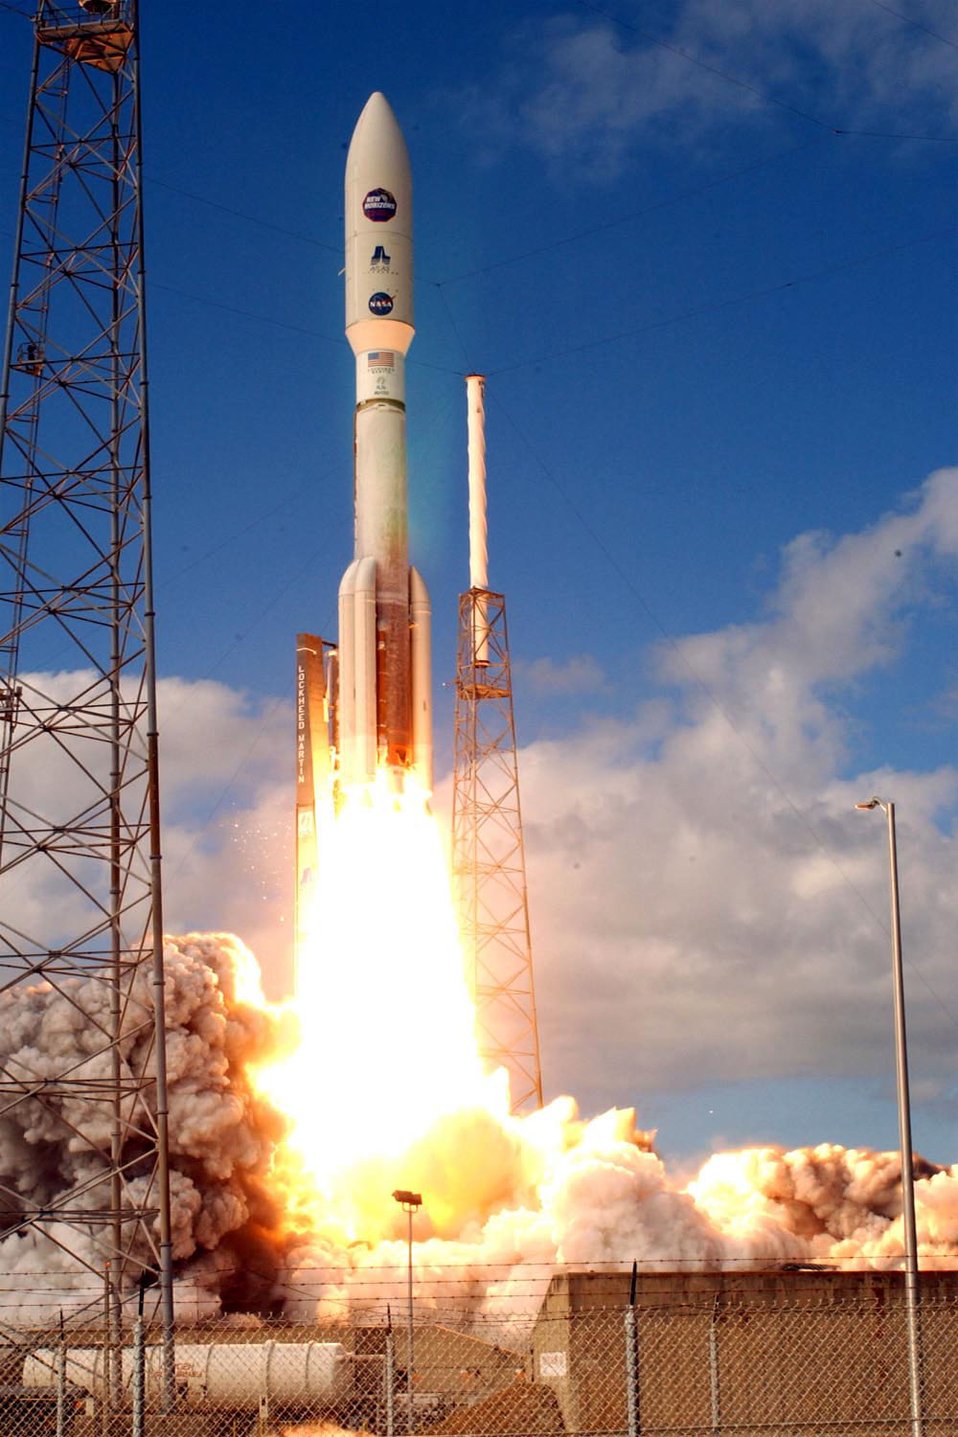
Atlas V launch

CAPE CANAVERAL AIR FORCE STATION, Fla. (AFPN) -- An Atlas V rocket launches from Space Launch Complex 41 here Jan. 19 on a nine-year mission to explore the planet Pluto and the edge of the solar system.